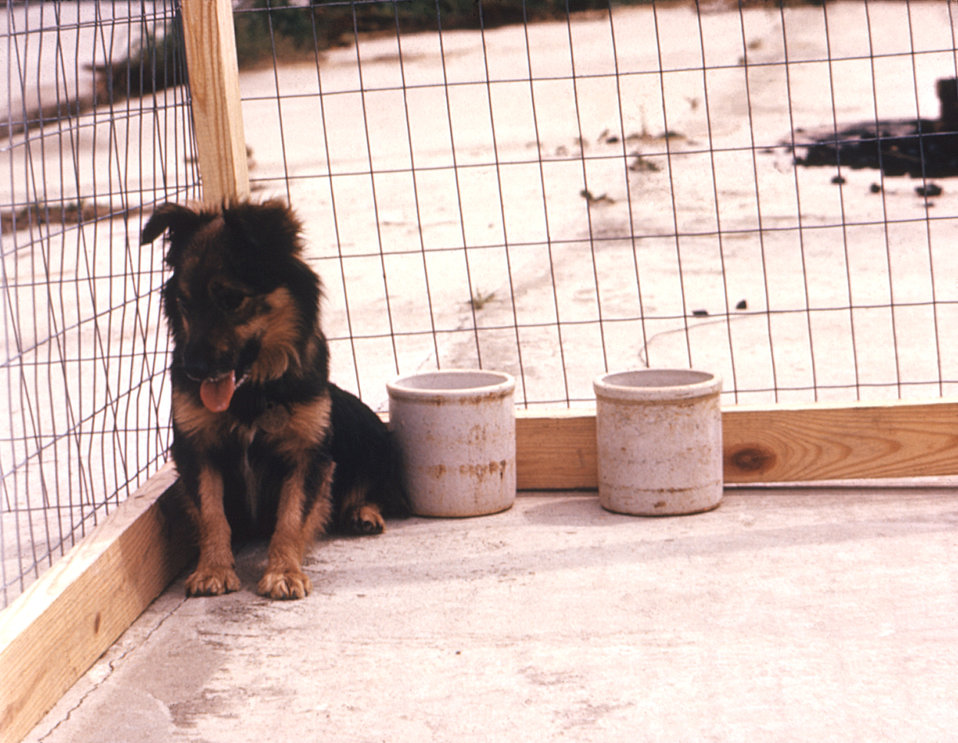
This dog is suffering from 'dumb' rabies virus, and exhibiting symptoms such as lethargy, and a need to remain isolated.